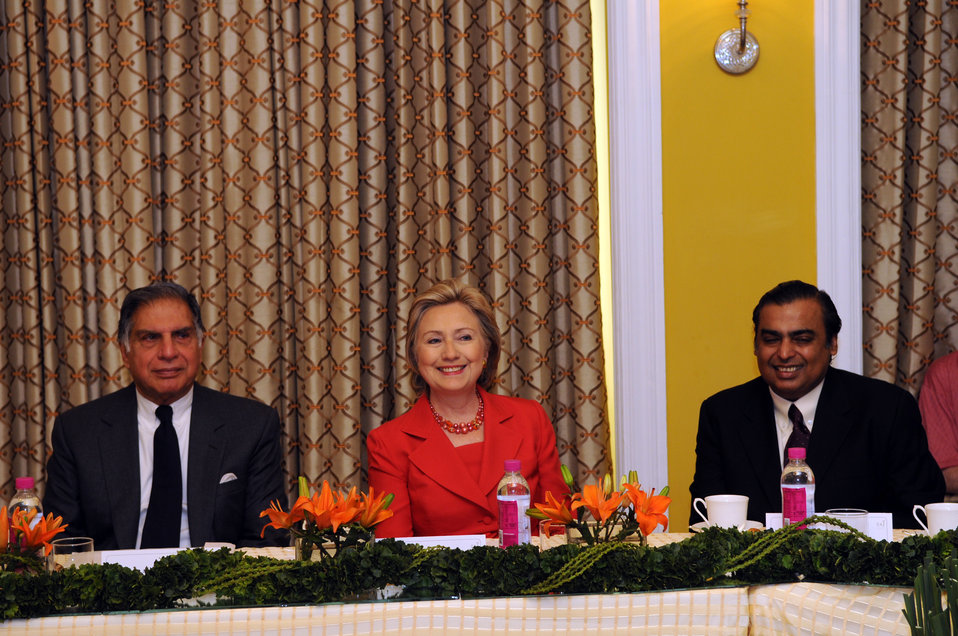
Secretary Clinton Meets With Business Leaders in Mumbai

U.S. Secretary of State Hillary Rodham Clinton meets with India's business leaders. From left to right: Ratan Tata, Charmain of the Tata Group; Secretary Clinton; Mukesh Ambani, Chairman and Managing Director of Reliance Industries in Mumbai, India July 18, 2009.